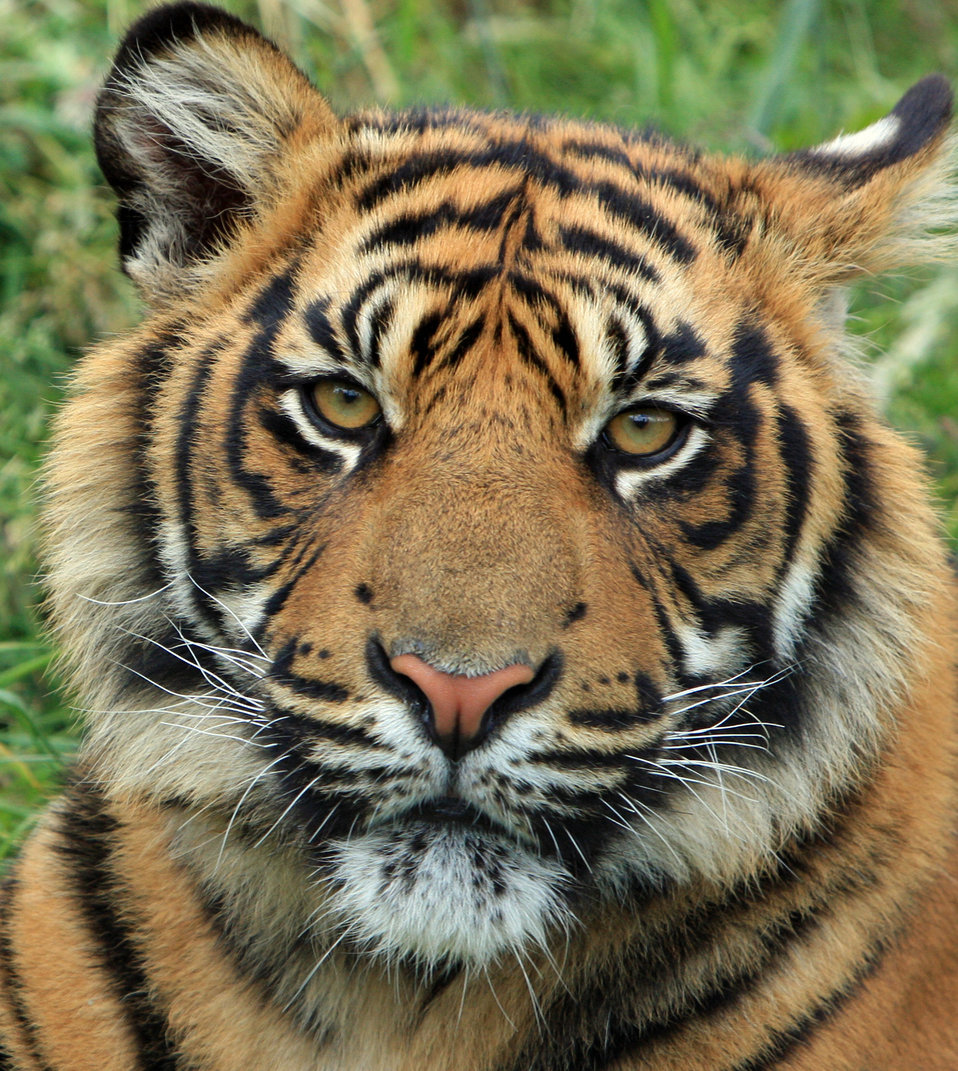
Tiger cub portrait

Close-up portrait of a young sumatran tiger cub head.